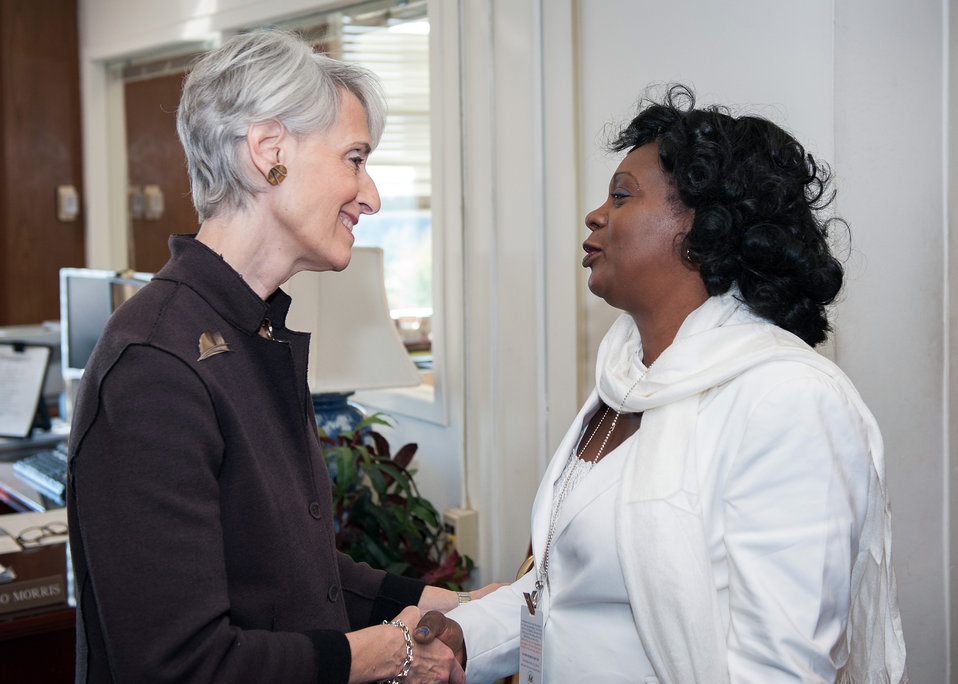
Under Secretary Sherman Greets Berta Soler of the Ladies in White

Under Secretary for Political Affairs Wendy Sherman greets Berta Soler, Spokesperson for the Ladies in White (Damas de Blanco), before their meeting at the U.S. Department of State in Washington, D.C., on October 24, 2013.